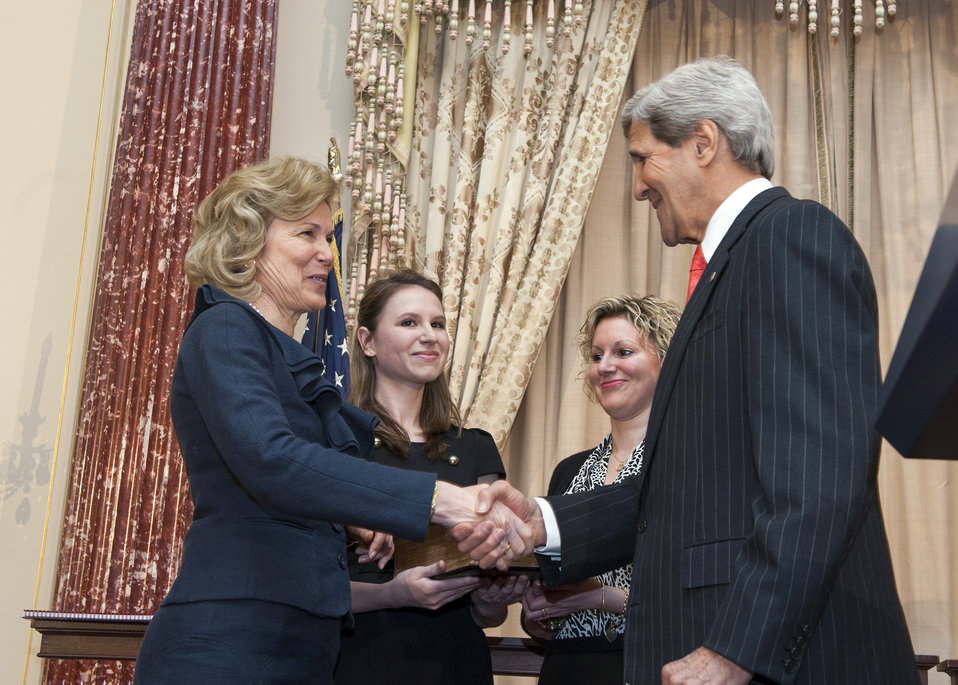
Secretary Kerry Swears in Ambassador Birx

U.S. Secretary of State John Kerry shakes hands with Deborah Birx after swearing her in as Ambassador-at-Large and Coordinator of the United States Government Activities to Combat HIV/AIDS at the U.S. Department of State in Washington, D.C., on April 25, 2014.